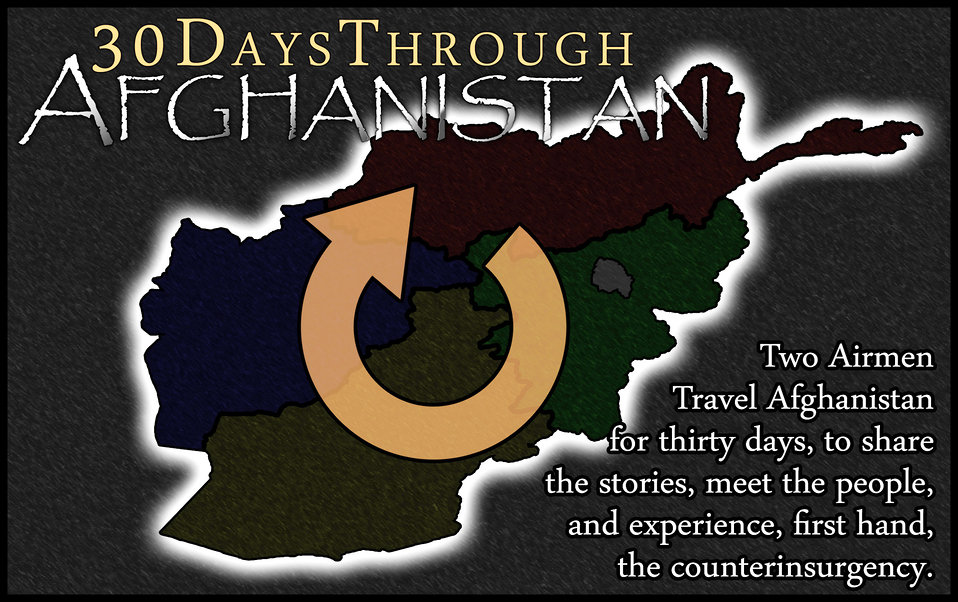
30 Days Across Afghanistan

Two Air Force journalists will spend 30 days traveling throughout Afghanistan, starting Feb. 8, and document their daily travels through blogs and video blogs to showcase the troops in an interactive manner.